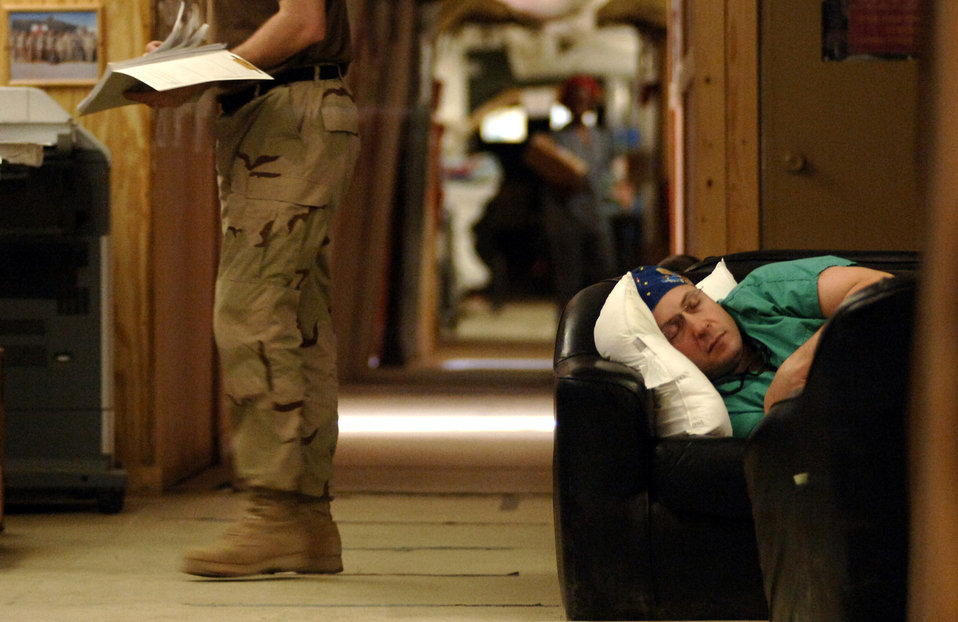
Taking a short break

Lt. Col. Jerry Pratt, a cardio-thoracic surgeon at the Air Force Theater Hospital at Balad Air Base, Iraq, takes advantage of some brief down time by taking a quick nap in a room adjacent to the emergency room. Ninety eight percent of the patients treated at this hospital survive.